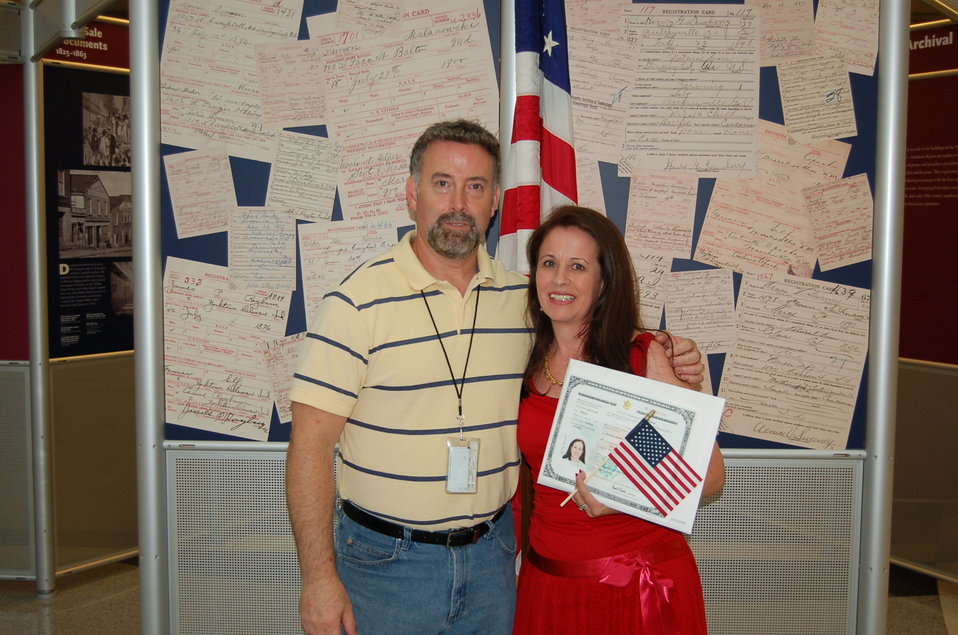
New Citizens